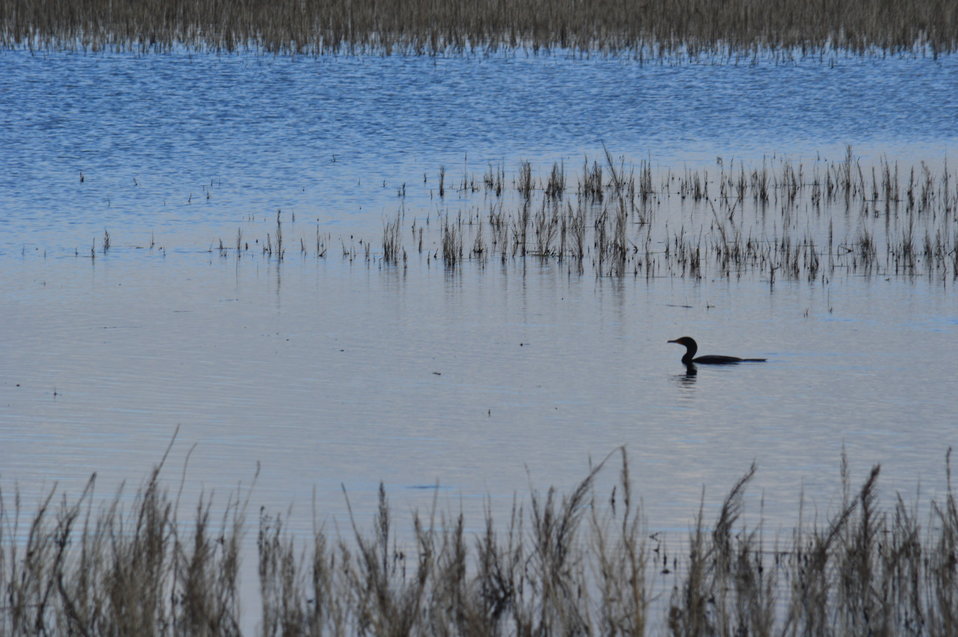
Waterfowl

Scenery and wildlife at Sand Lake National Wildlife Refuge in South Dakota